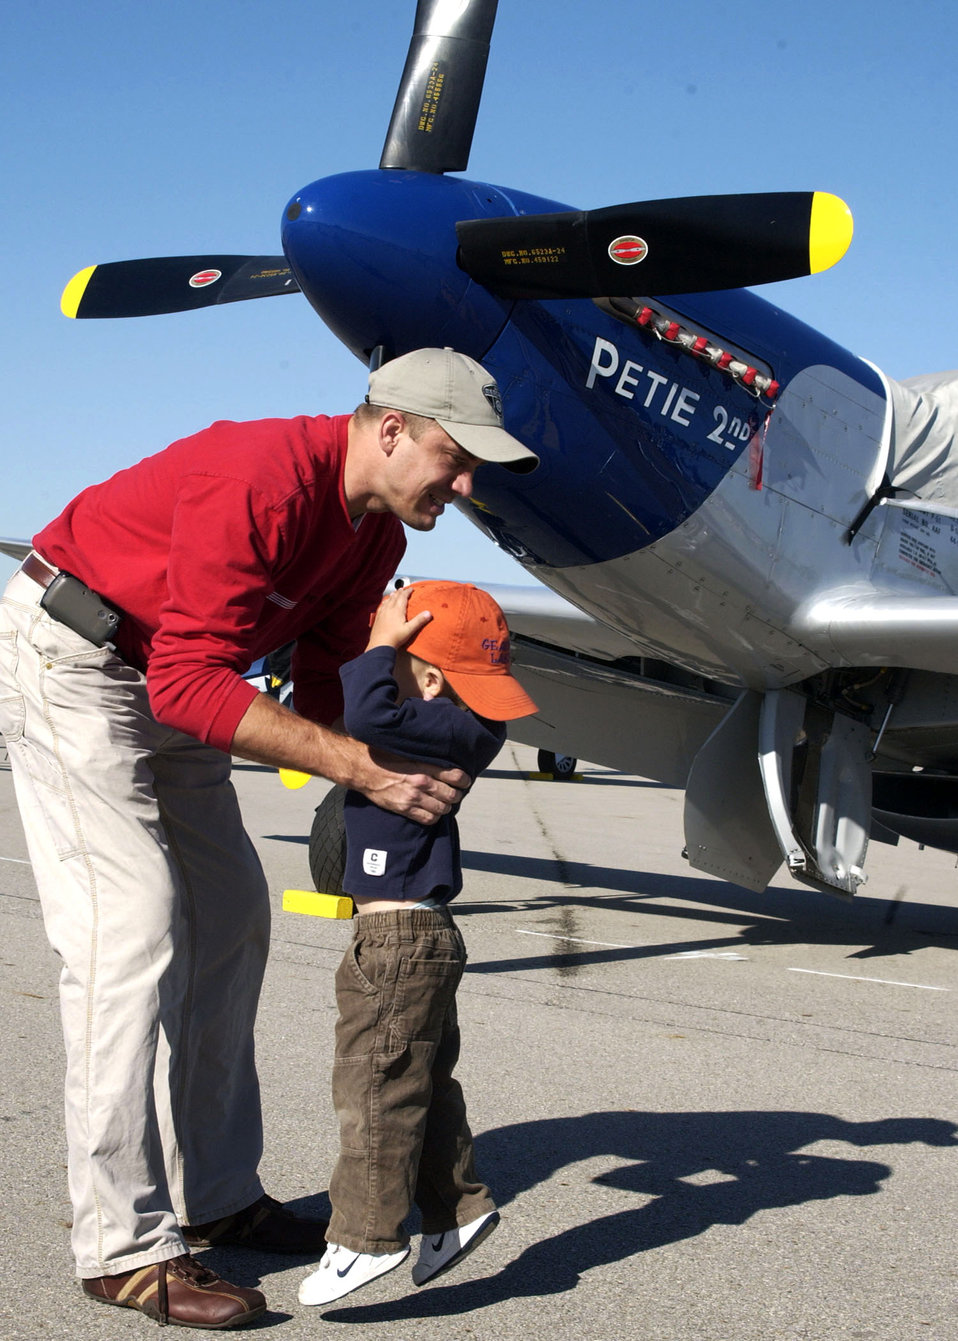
Air Force Heritage Week wraps up in Columbus

Zach and Marty Ertel from Columbus, Ohio, check out a P-51 at the Gathering of Mustangs and Legends held Sept. 28 at Rickenbacker International Airport in Ohio. This was Zach's first air show.